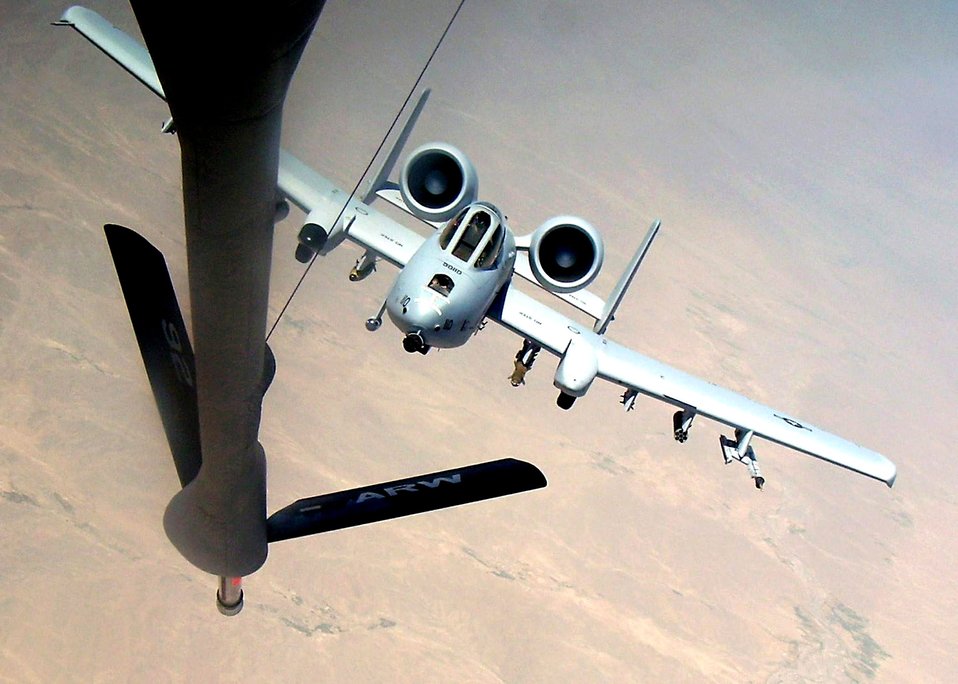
Jan. 14 airpower summary: A-10s show force

An A-10 Thunderbolt II moves into position behind a KC-135 Stratotanker on a combat mission over Afghanistan. The A-10 is deployed from the 442nd Fighter Wing, an Air Force Reserve unit based at Whiteman Air Force Base, Mo., to Bagram Air Base, Afghanistan, as part of Operation Enduring Freedom.